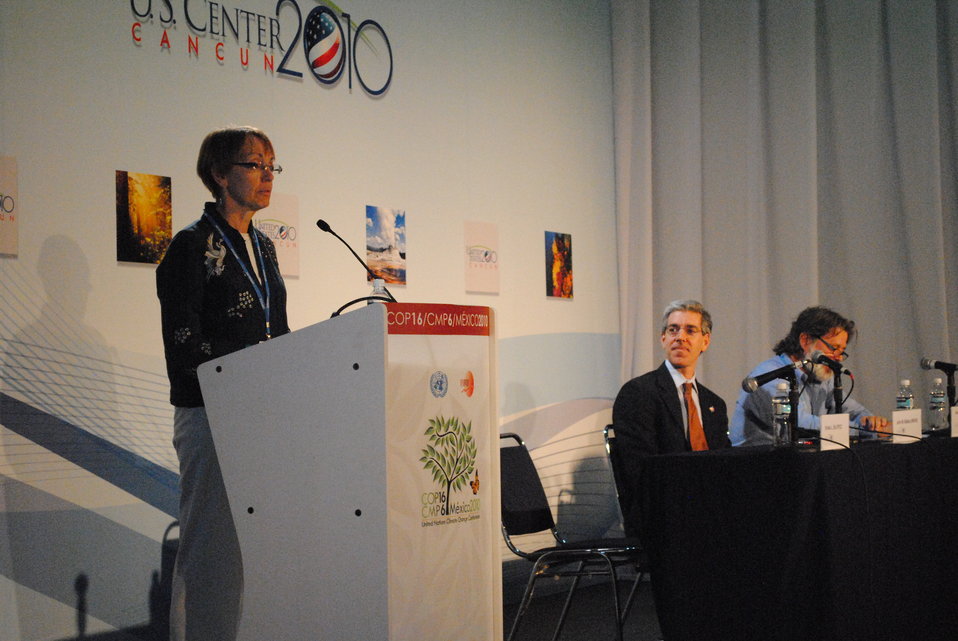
A Panelist Presents During the 'Climate Change and Human Health' Side Event

A panelist presents during the side event, Climate Change and Human Health, at the U.S. Center at COP-16 in Cancun, Mexico, on December 3, 2010.